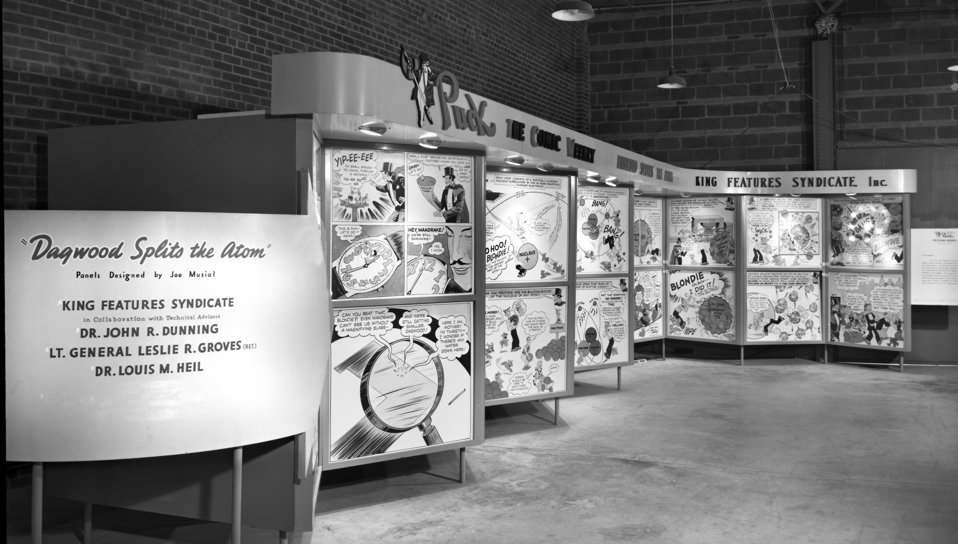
Man and Atom Exhibit Oak Ridge 1948

5274a DOE photo Ed Westcott 10-25-28-1948 Building 1916-T-1 Oak Ridge Tennessee